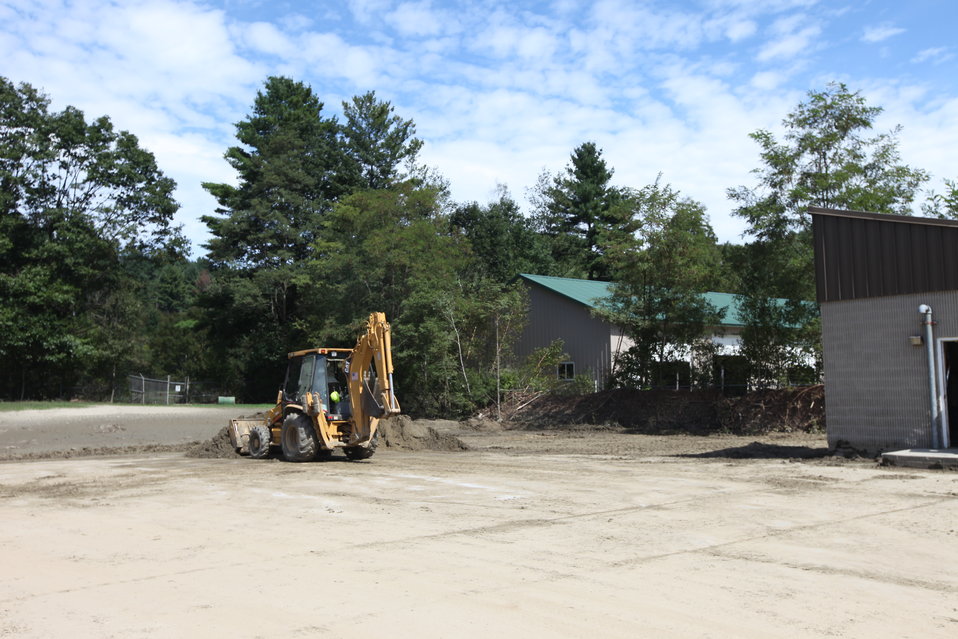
Storm damage clean-up at White River NFH

Heavy equipment operators came from other USFWS stations to help clean up.